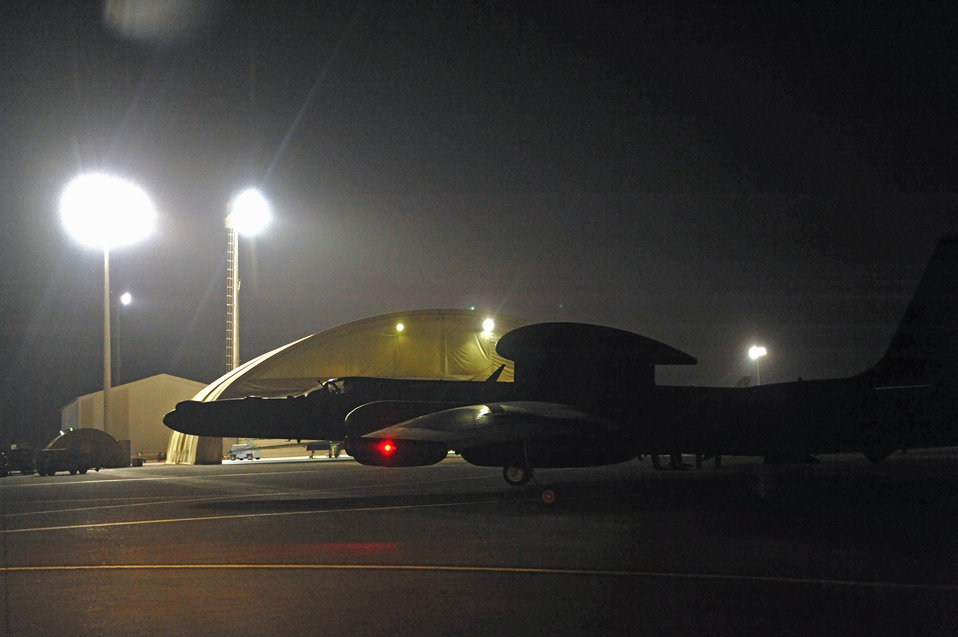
Another mission under his belt

Maj. Patrick Hudson taxis a U-2 aircraft to a parking spot Aug. 24 at an air base in Southwest Asia. Major Hudson is assigned to the 99th Expeditionary Reconnaissance Squadron, and completed his 1,000th hour of flight in the U-2 aircraft.